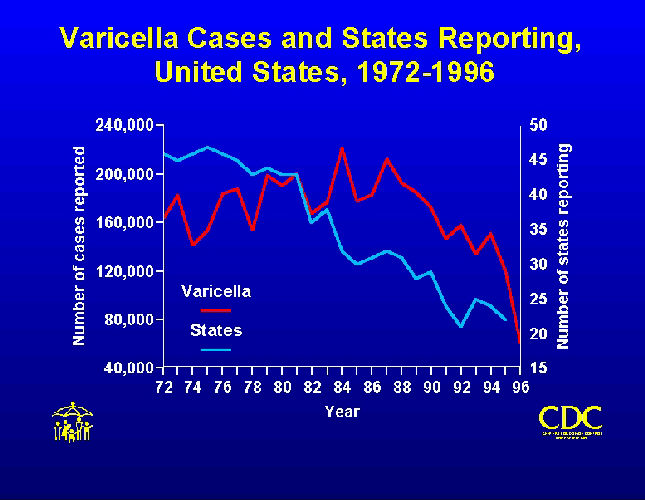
Varicella cases and states reporting, United States, 1972-1996.